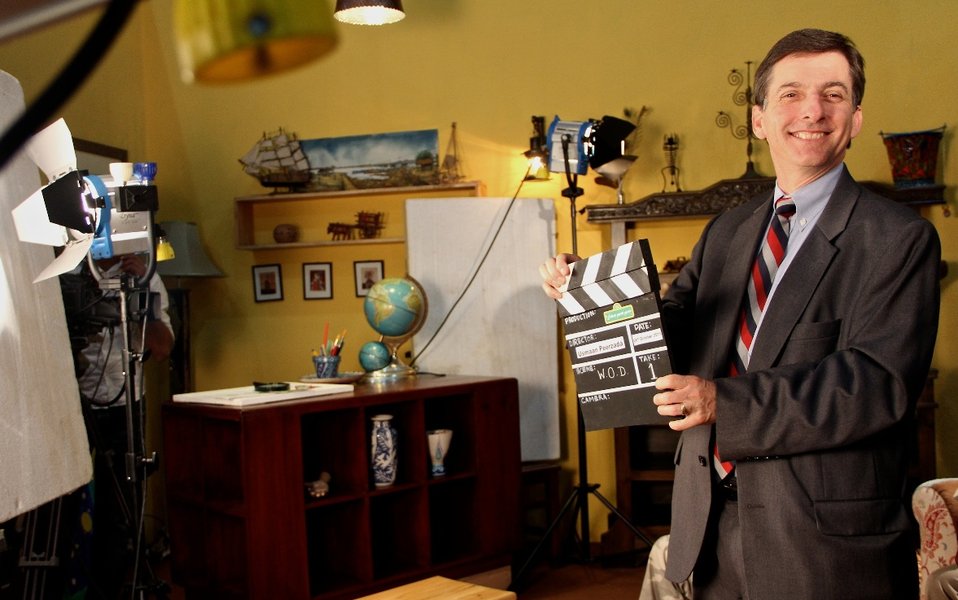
camera-take-action!